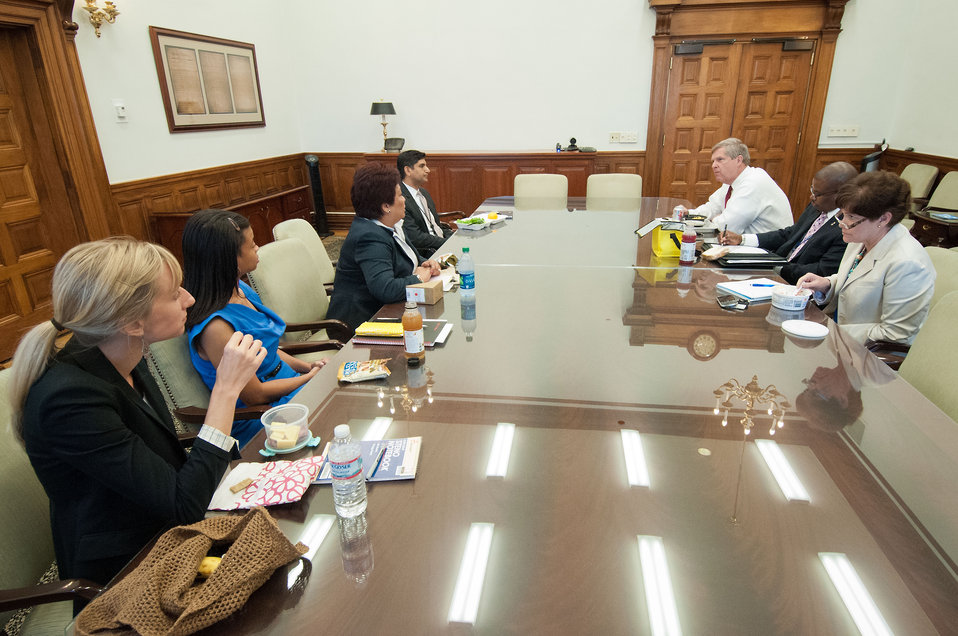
Agriculture Secretary Tom Vilsack met with United States Department of Agriculture employees for a Brown Bag lunch to discuss the role they play and to thank them for their dedication and diligence in Washington, D.C., on Wednesday, July 25, 2012. From left: Rebecca Shively, Farm Services Agency, Janel Barsi, Animal and Plant Health Inspection Service, Marian Romero, Departmental Management, Ven Neralla, National Institute of Food and Agriculture, Agriculture Secretary Tom Vilsack, Tony Myers, Departmental Management and Krysta Hardin, Chief of Staff.